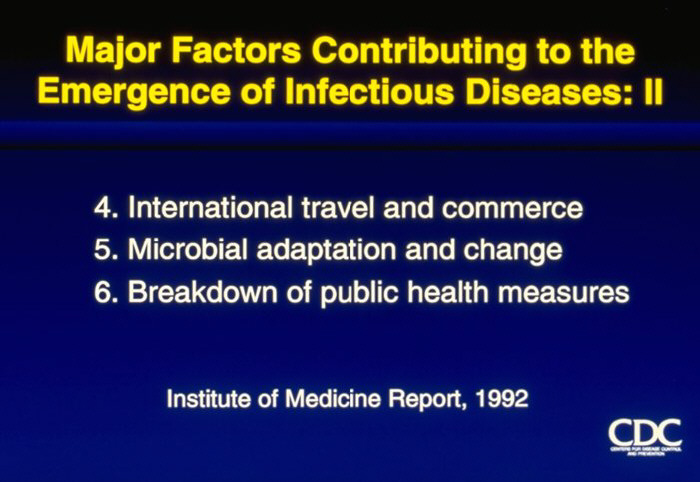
Major Factors Contributing to the Emergence of Infectious Diseases: II